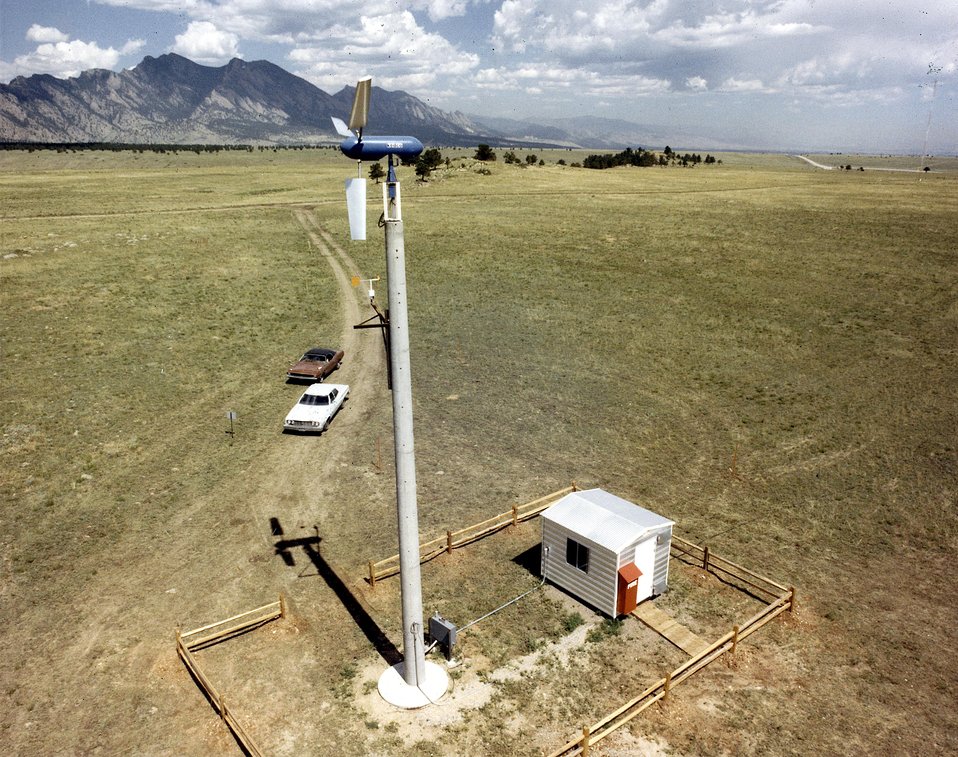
Kedco 12V 1.2KW. c. undated